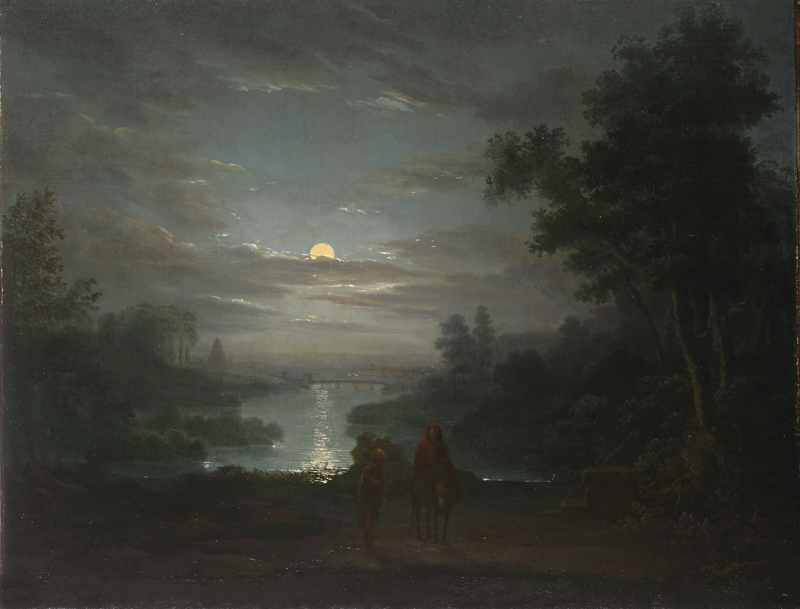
Abraham Pether - Rest on the flight into Egypt